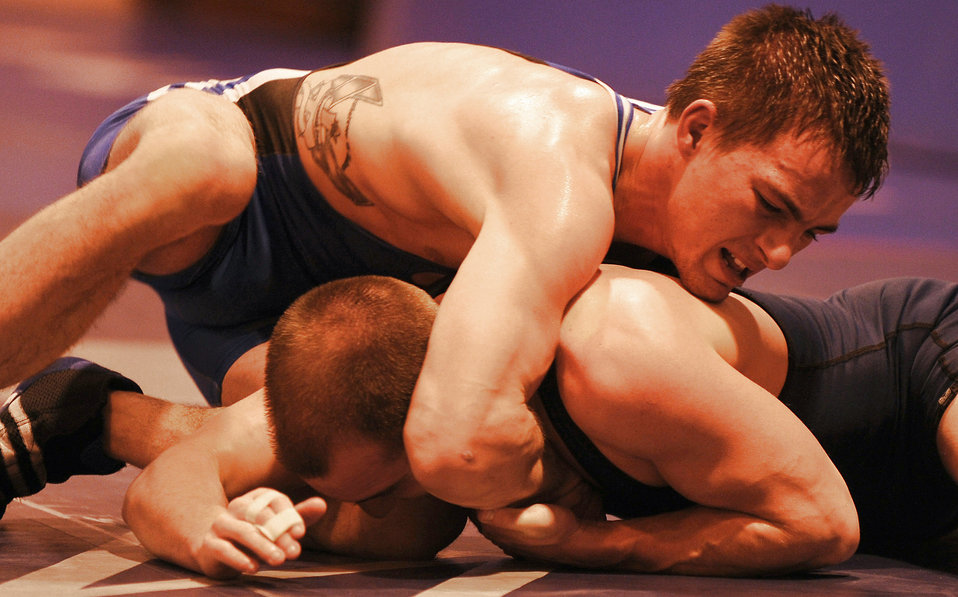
11 Airmen selected for Air Force wrestling team

Airman 1st Class Tyler Moore wrestles Senior Airman Christopher Wise during a training match for the Air Force Wrestling Camp Feb. 25 at Mountain Home Air Force Base, Idaho. Airman Moore, a native of Nampa, Idaho, is one of 11 Airmen selected to represent the Air Force during the Armed Forces Wrestling Championships hosted at Mountain Home AFB. Training for the service-wide competition begins here March 7. Airman Moore is from Aviano Air Base, Italy, and Airman Wise is stationed at Moody AFB, Ga.